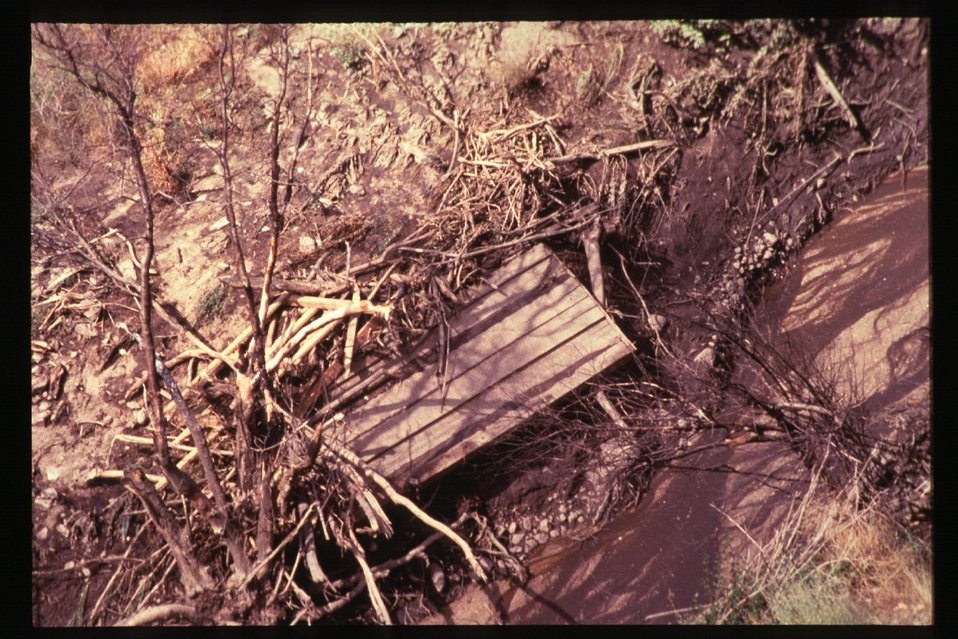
8th Street Fire Four Rivers Field Office LSRD Lower Snake River District